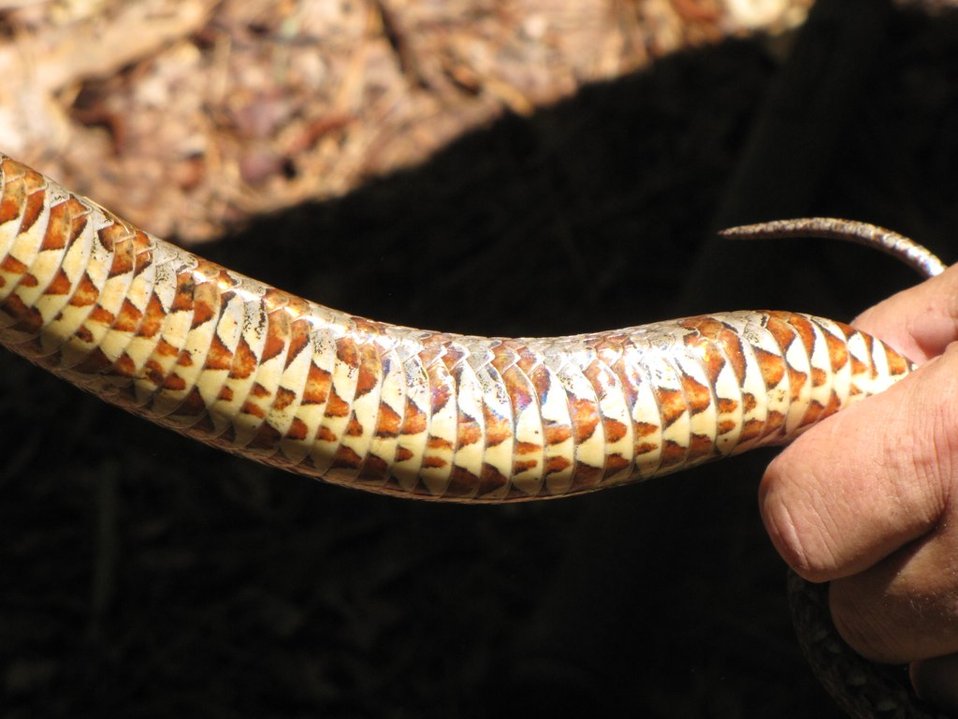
Mattaponi Wildlife Management Area, Virginia

Survey (June 27 - 28, 2012)

Common watersnake (Nerodia sipedon sipedon)